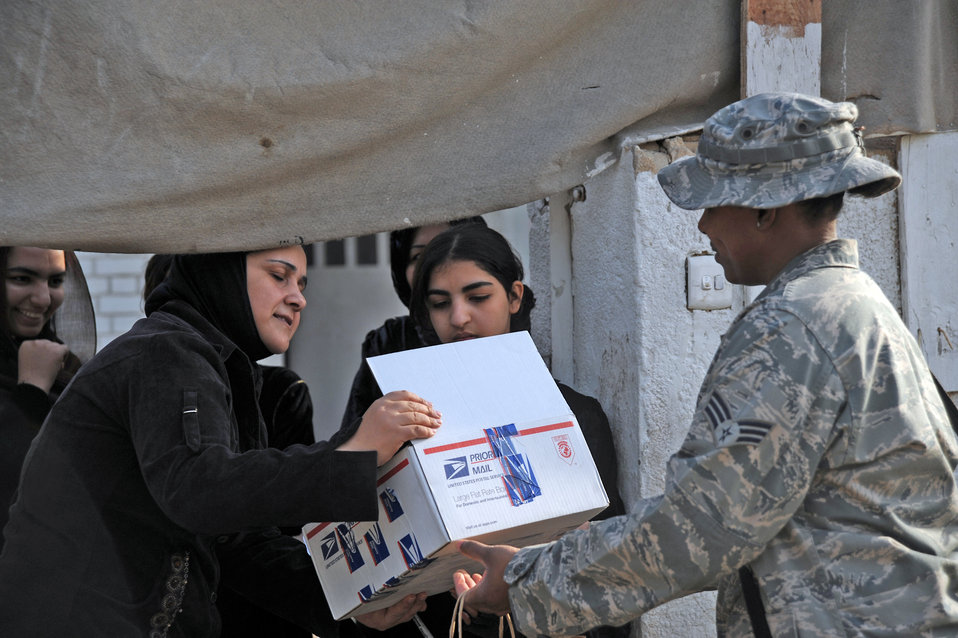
Servicemembers donate items to Iraqi neighbors

Senior Airman Brena Wilkerson hands out packages of supplies to an Iraqi girl Jan. 29, 2010, near Sather Air Base, Iraq, as part of the Sather AB Rising Six good neighbor program. Airman Wilkerson is assigned to the 447th Expeditionary Communications Squadron.